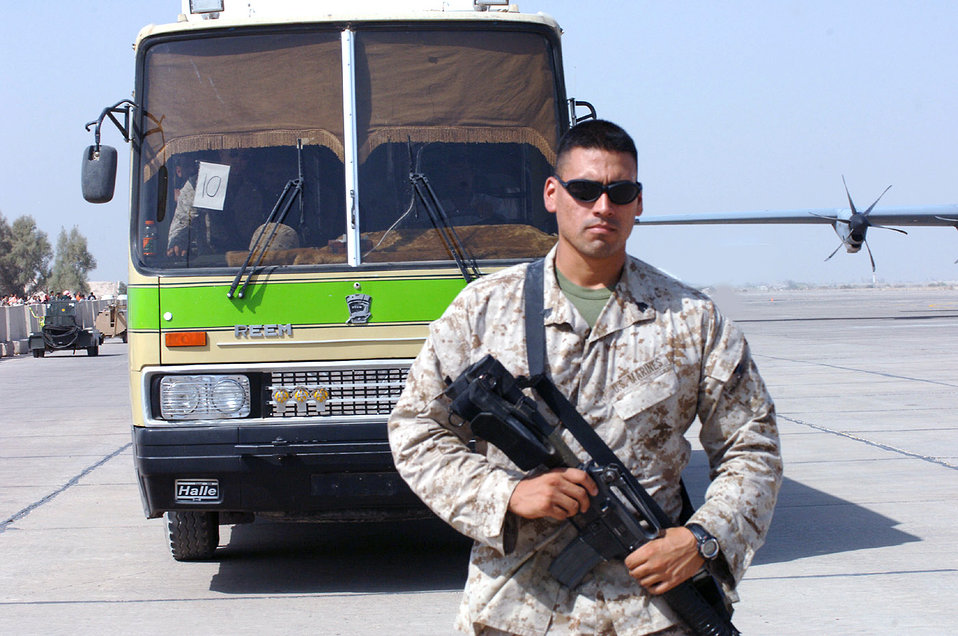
Voting time

SATHER AIR BASE, Iraq -- Marine Sgt. Dennis Copas escorts a busload of Iraqi poll workers to awaiting aircraft. The Iraqis flew from here to their respective polling stations. The sergeant is from the 2nd Marine Expeditionary Force headquarters group.